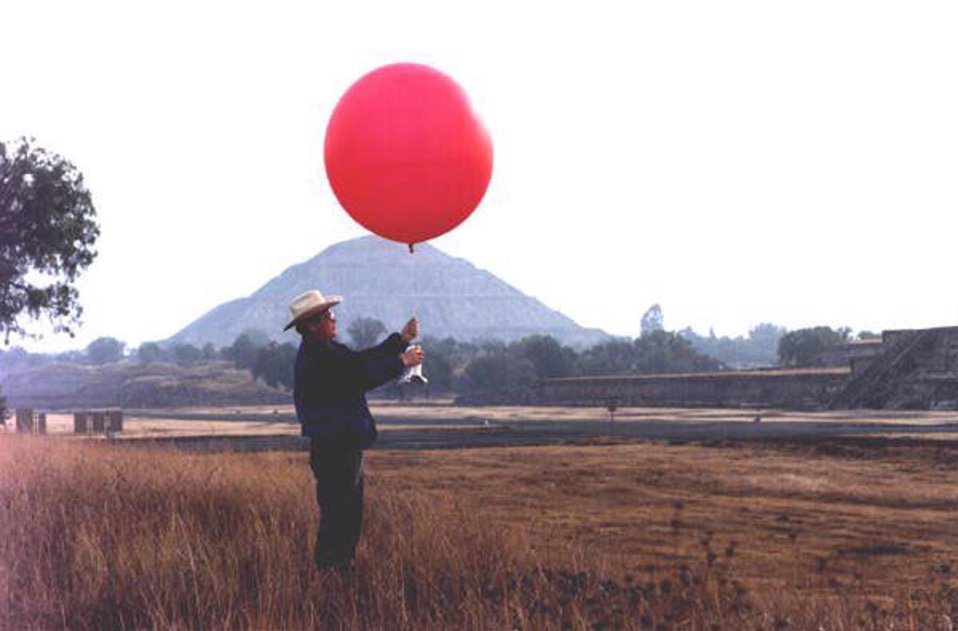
PNNL SCIENTIST SENDING A BALLOON WITH ATTACHED TEMPERATURE SENSORS INTO THE ATMOSPHERE IN MEXICO.

BALLOONS WITH ATTACHED TEMPERATURE SENSORS, ARE CALLED AIRSONDES. THEY ARE SENT INTO THE ATMOSPHERE TO GATHER METEOROLOGICAL DATA FOR STUDIES ON AIR POLLUTION. THE PICTURE SHOWS A PNNL SCIENTIST AT TEOTIHUACAN, NORTHEAST OF MEXICO CITY, WHERE HER RELEASED AIRSONDES INTO THE ATMOSPHERE FIVE TIMES A DAY TO RECORD WIND AND TEMPERATURE STRUCTURE.